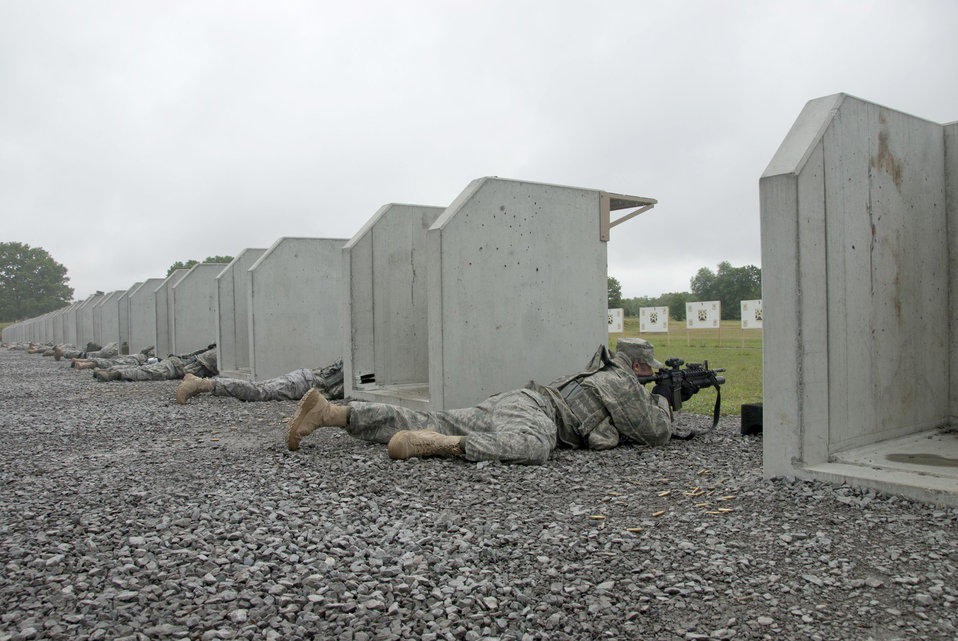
Heavy arms training

Members of the 134th Security Forces Squadron train with the M4 Carbine May 16, 2011, at Arnold Air Force Base, Tenn.